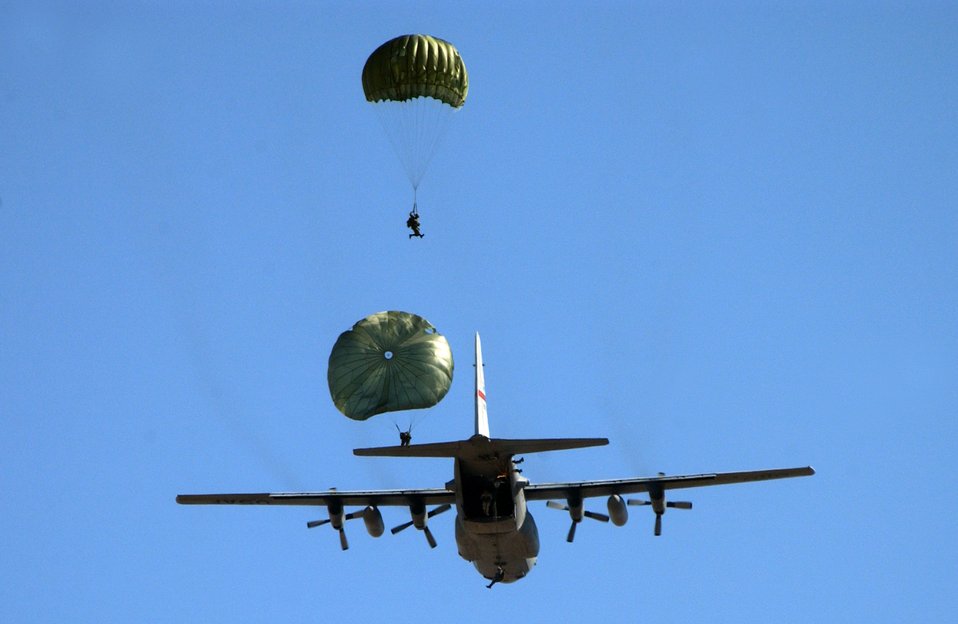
Taking a plunge

Pararescue personnel from the 414th Combat Training Squadron and parachutists from the 820th Red Horse Squadron, Nellis Air Force Base, Nev., jump out a C-130J Hercules Sept. 1, 2006, over the Nevada Test and Training Ranges in support of Red Flag Exercise 06-2.